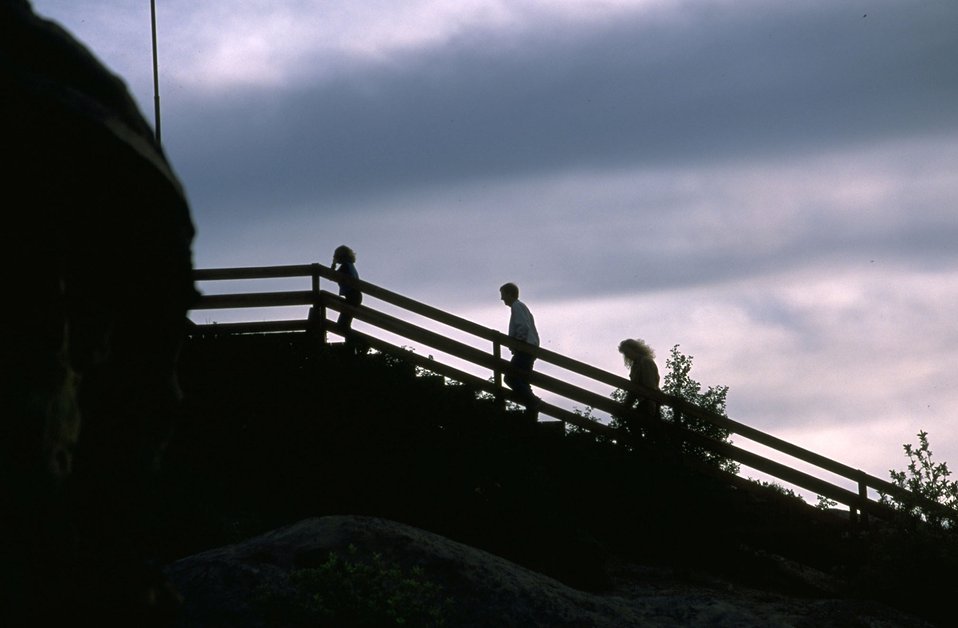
Silhouette of visitors climbing the stairs of the Boardwalk on Pompeys Pillar